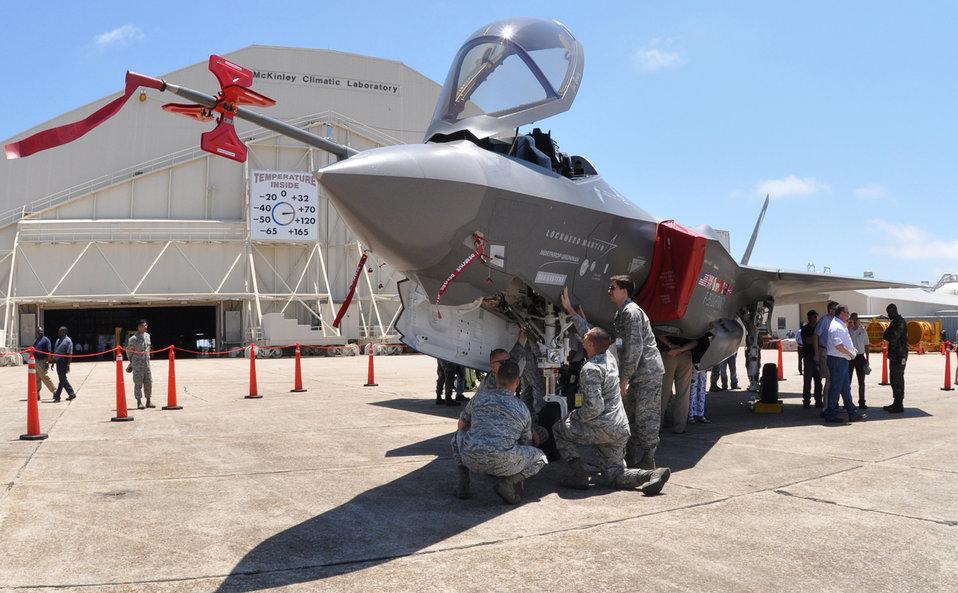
F-35 test plane flies over Eglin

Airmen get a close-up look at the F-35 Lightning II Joint Strike Fighter test aircraft AA-1 as it sits on the ramp April 23 at Eglin Air Force Base, Fla. The aircraft's first arrival at the base was to provide a showcase to base members and the local community.